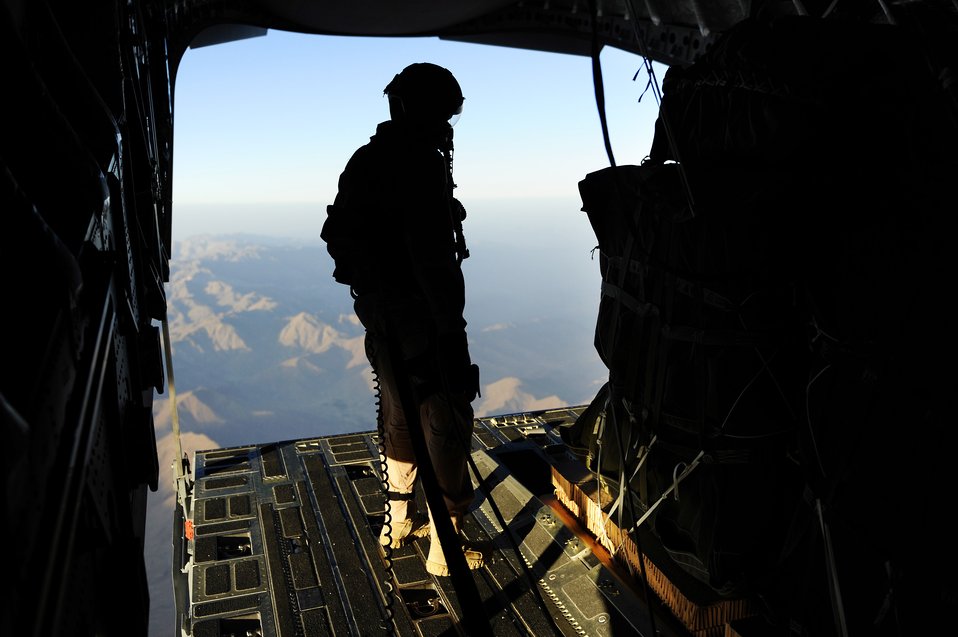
Supply drop in Afghanistan

Senior Airman Bryce Kester inspects pallets of cargo that will be dropped from a C-17 Globemaster III to a forward operating base in Afghanistan, Aug. 27, 2009, in support of Operation Enduring Freedom. Airman Kester is a loadmaster from the 817th Expeditionary Airlift Squadron, and deployed from McChord Air Force Base, Wash.